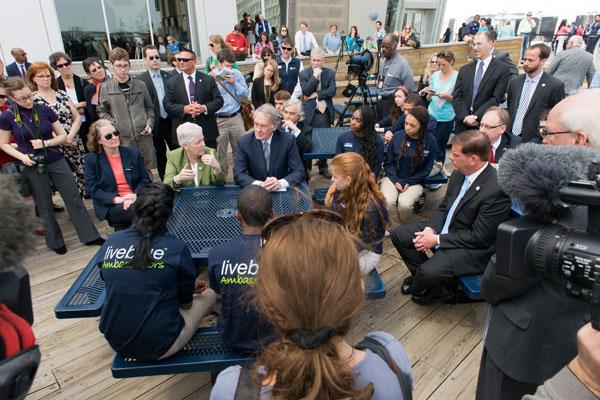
Day in the Life - Earth Day, April 22, 2014

12:31 pm – An all-star lineup turned out for the Earth Day event at the Boston Aquarium. McCarthy was joined by Energy Secretary Ernie Moniz, Boston Mayor Marty Walsh, and Senator Ed Markey, along with dozens of Bostonians interested in doing more on climate change. (5/12)